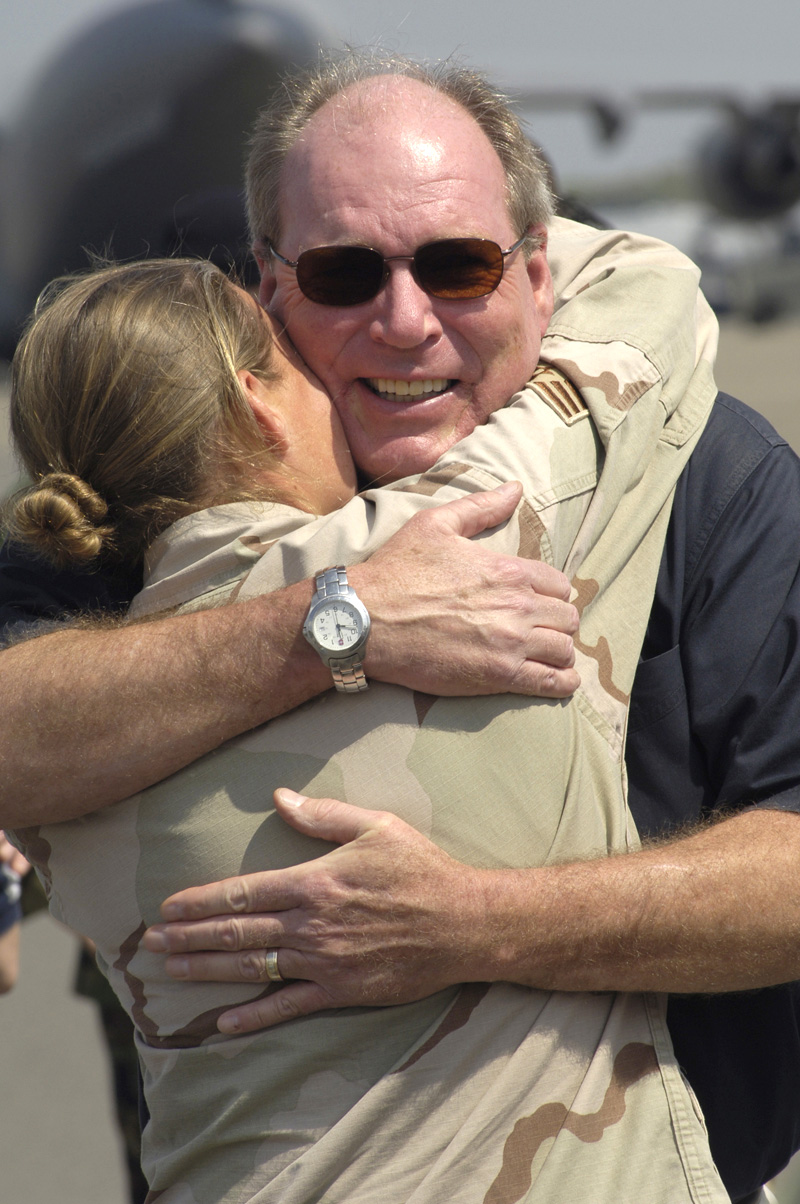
In Dad's arms

Senior Airman Kally White hugs her father, Doug White, on Monday, April 3, 2006, after returning to Charleston Air Force Base, S.C., from a six-month deployment to Camp Bucca, Iraq. Airman White is with the 437th Security Forces Squadron.